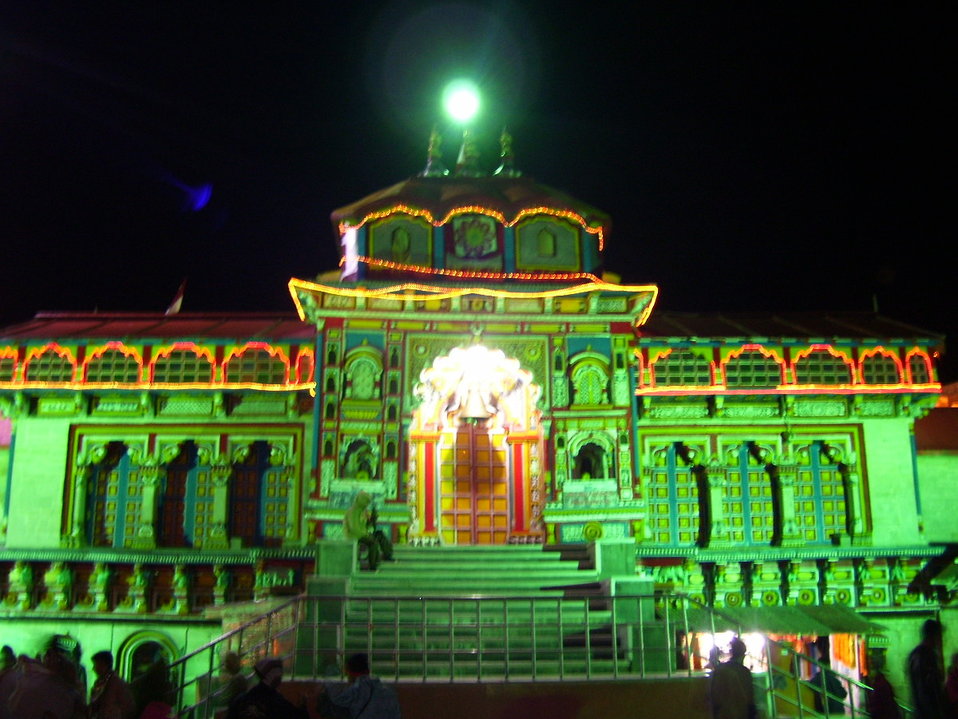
Entrance of Badrinath Temple at night.